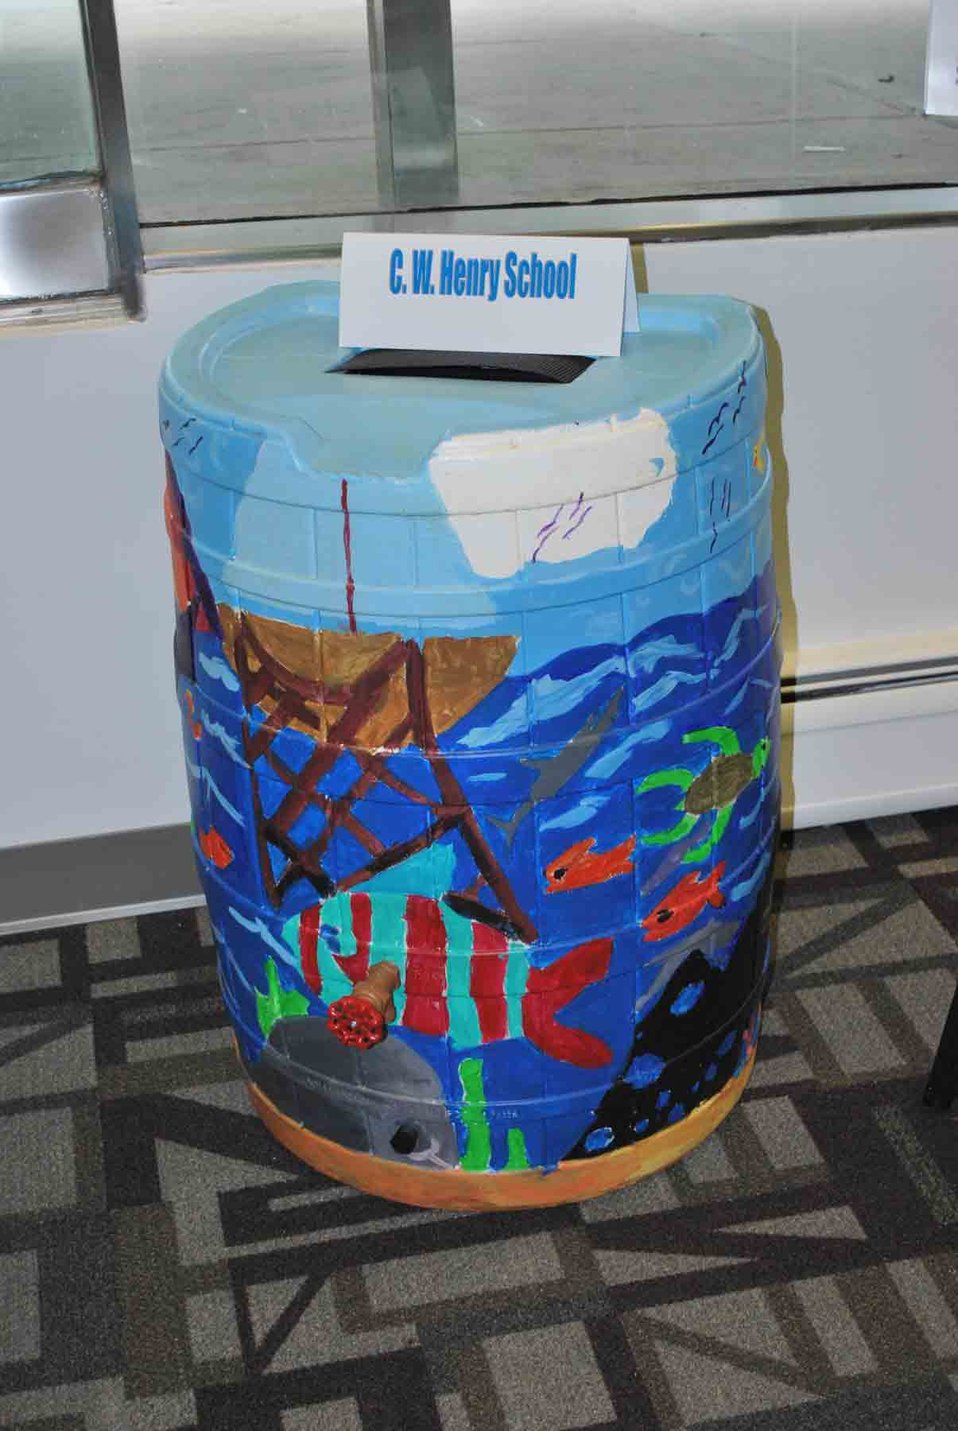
Rain Barrel Art, The Henry School, Pennsylvania

The “Art and Science of Rain Barrels” exhibit is on display in the Public Information Center at EPA Region 3, Philadelphia, PA. The exhibit will be on display until September 20, 2013. Students from the C.W. School designed this rain barrel with the Mt. Airy Art Garage.